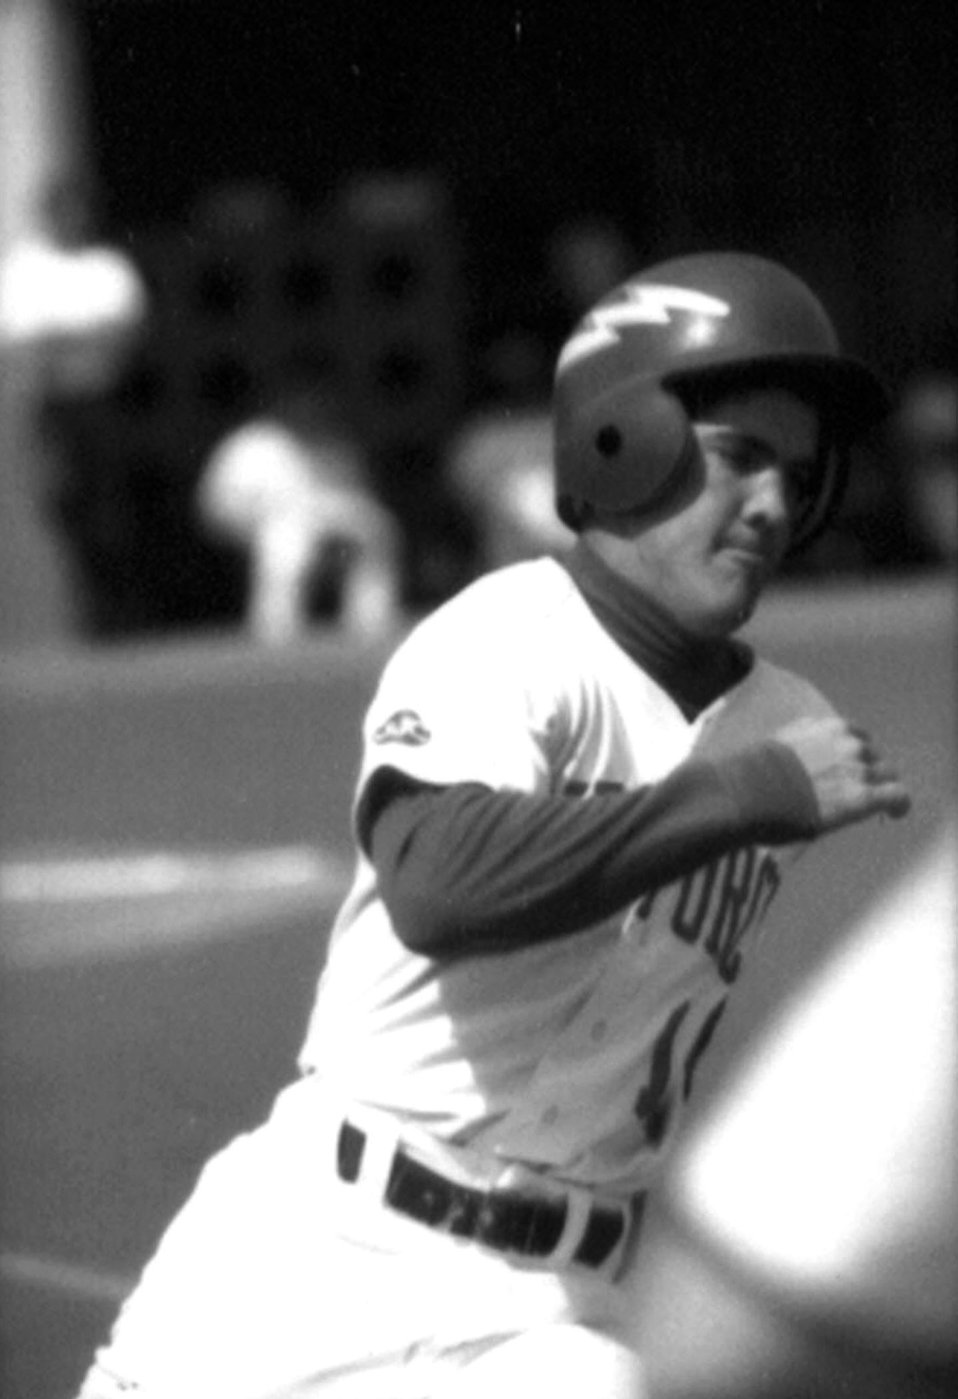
Former Falcon to join all-America hall of fame

Lance Pilch rounds the bases during a U.S. Air Force Academy baseball game in the early '90s. Now a major, he has been selected for induction in the College Sports Information Directors of America Academic All-America Hall of Fame.